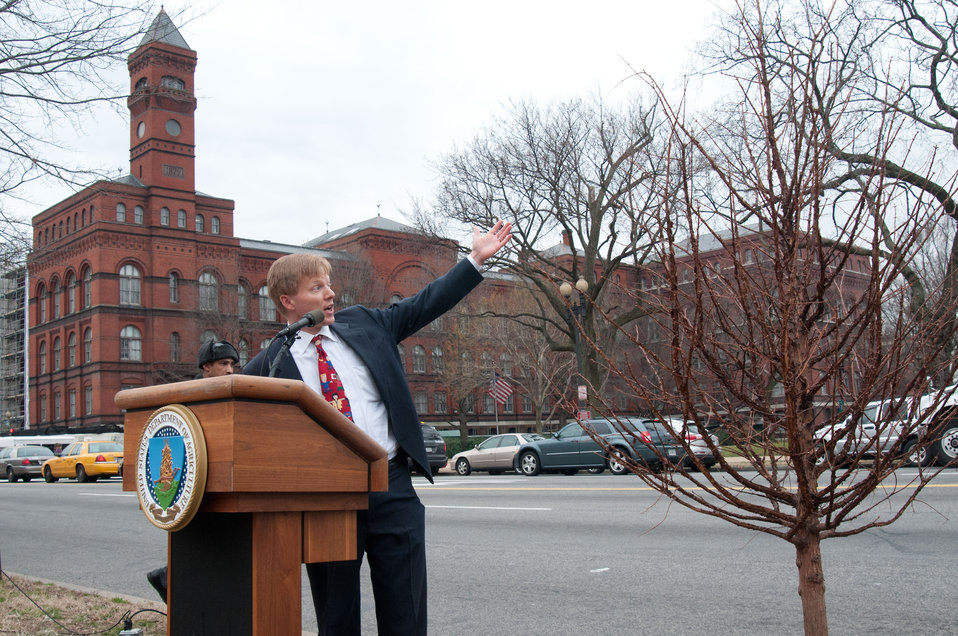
United States Department of Agriculture (USDA) Director Faith-Based & Neighborhood Partnerships Max Finberg, talked about the Jewish celebration Tu B’Shevat “The New Year of the Trees;” and the freshly planted United States Department of Agriculture (USDA) Director Faith-Based & Neighborhood Partnerships Max Finberg, talked about the Jewish celebration Tu B’Shevat “The New Year of the Trees;” after planting a Dawn Redwood that is ideally located next to the USDA Headquarters, Whitten Building, USDA’s Forest Service (red building) the United States Holocaust Memorial Museum and the Washington Monument at 14th Street and Independence Ave SW, Washington, D.C. on in Wednesday, February 8, 2012.